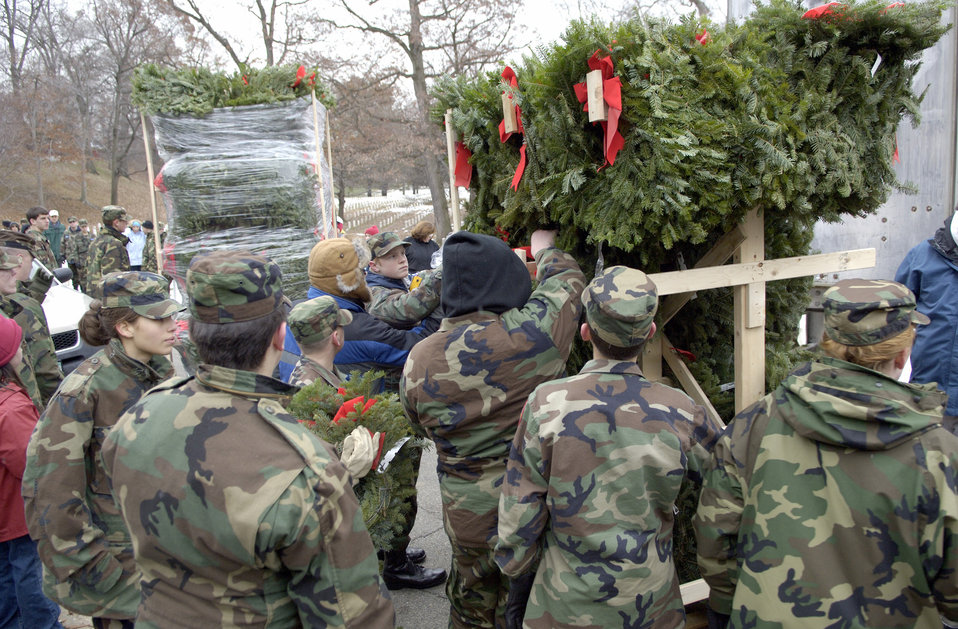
Honoring heroes

ARLINGTON, Va. (AFPN) -- Hundreds of volunteers gathered at Arlington National Cemetery to place more than 5,000 donated Christmas wreaths on head stones. The 14th annual wreath laying event is the result of Worcester Wreath Company's owner Morrill Worcester's, childhood dream of doing something to honor those laid to rest in the national cemetery..